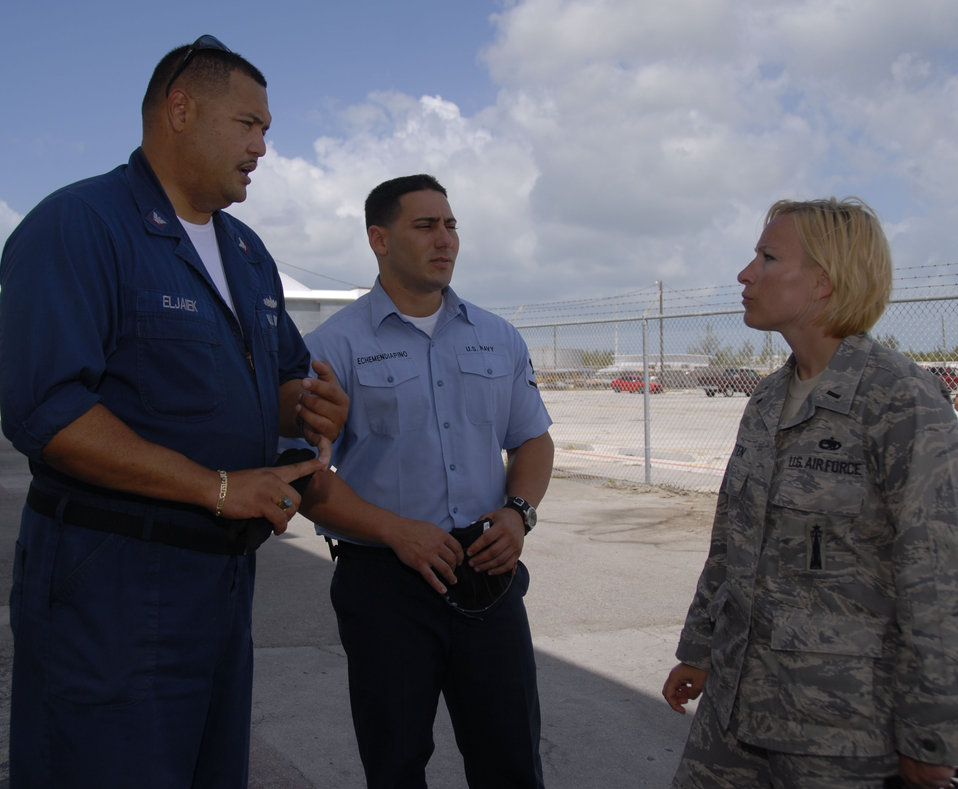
Air Guard, Navy train together

Petty Officers 3rd Class Ernesto Eljaiek and Reynel Echemendiapino, hazardous materials specialists and fleet liaisons at Naval Air Station Key West, Fla., coordinate with 1st Lt. Christy Kasten, 115th Fighter Wing maintenance officer, on hangar logistics as the Airmen prepare to complete their deployment. The Wisconsin Air National Guard's 115th FW was in Florida to participate in air-to-air combat skills training along side their naval counterparts from Strike Fighter Squadron 2, Naval Air Station Lemoore, Calif., during a two-week training exercise.